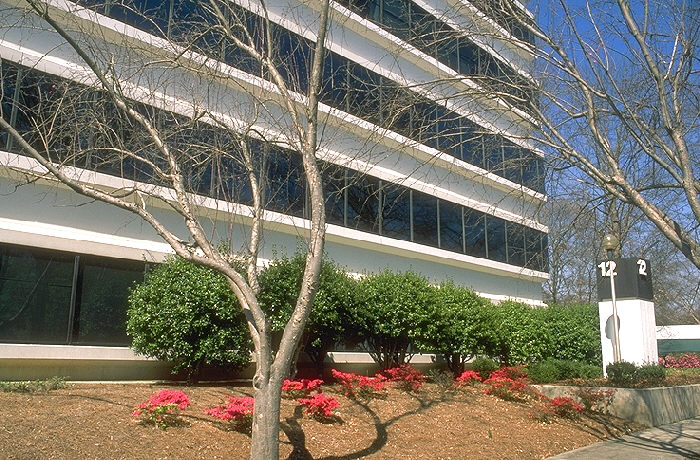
Building 12, Corporate Square, CDC.